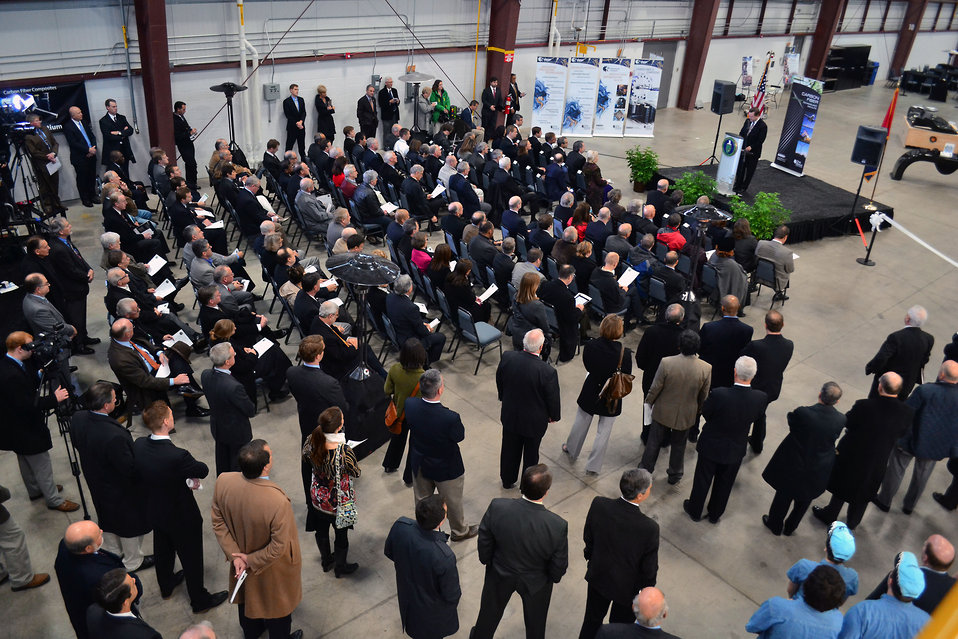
Carbon Fiber Technology Facilty Open House Oak Ridge Tennessee

13-025 DOE photo Lynn Freeny